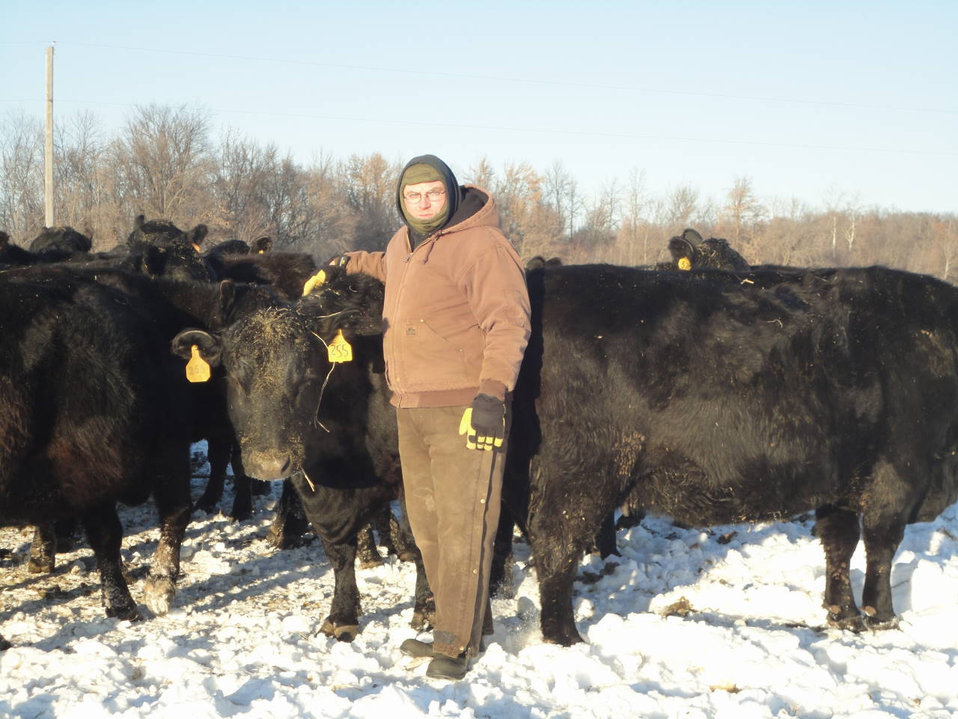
Rotational Grazing 1

Pete Berscheit uses rotational grazing on his Minnesota farm to improve production while helping the environment.